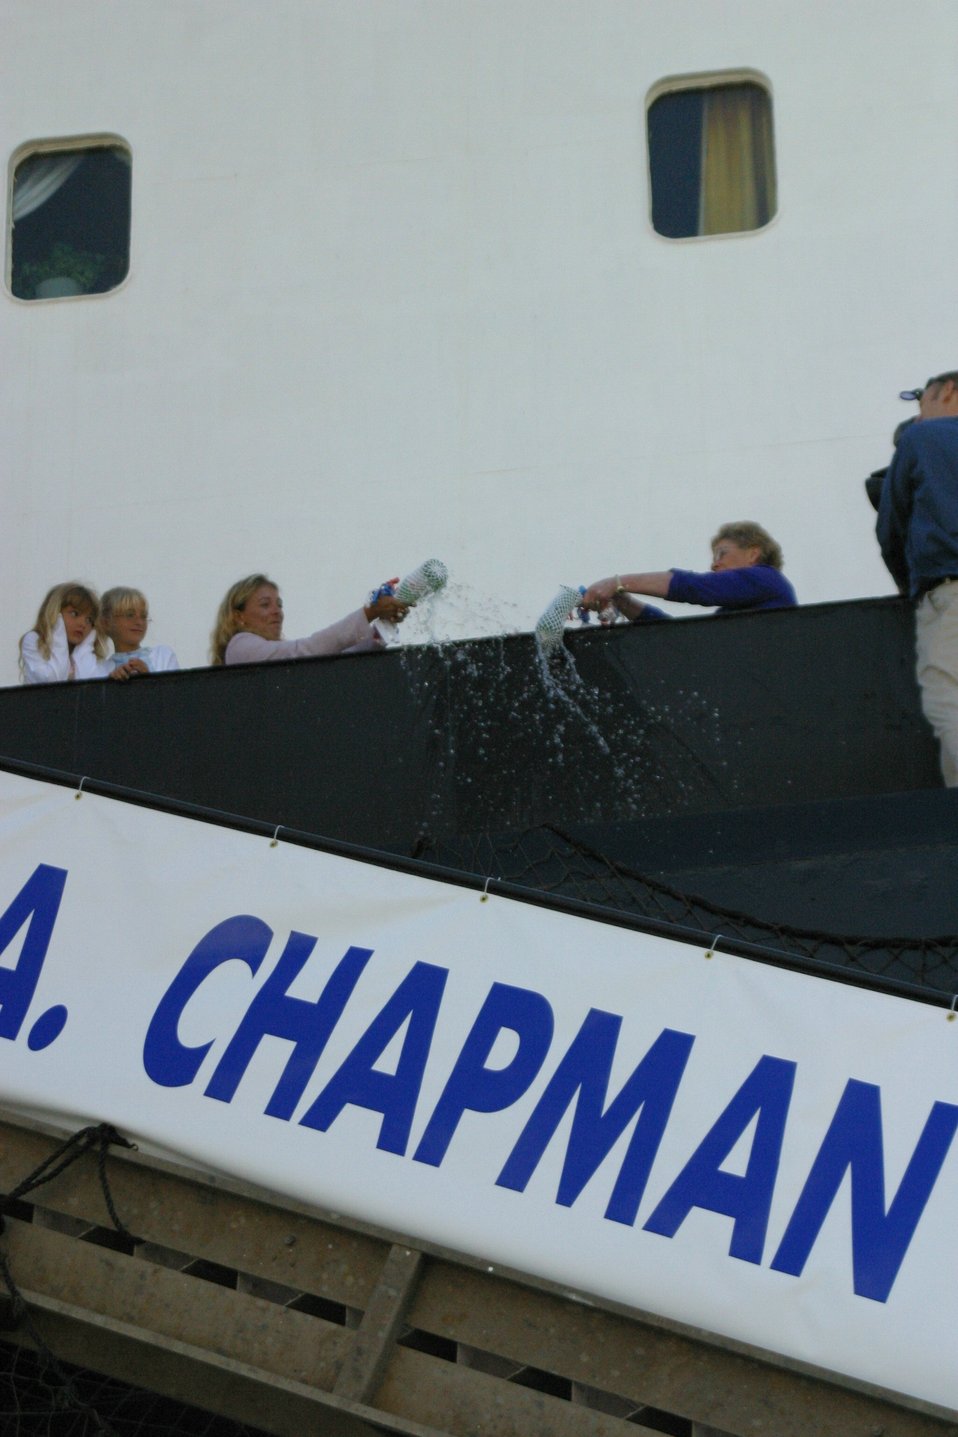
Ship takes heroic legacy to the fight

SUNNY POINT, N.C. -- Valerie Chapman (left) and Mickey Handy christen the MV Tech. Sgt. John A. Chapman on the ship’s railing April 8. The women co-sponsored the ceremony. Mrs. Chapman is Sergeant Chapman’s widow, and Mrs. Handy is Gen. John W. Handy’s wife.